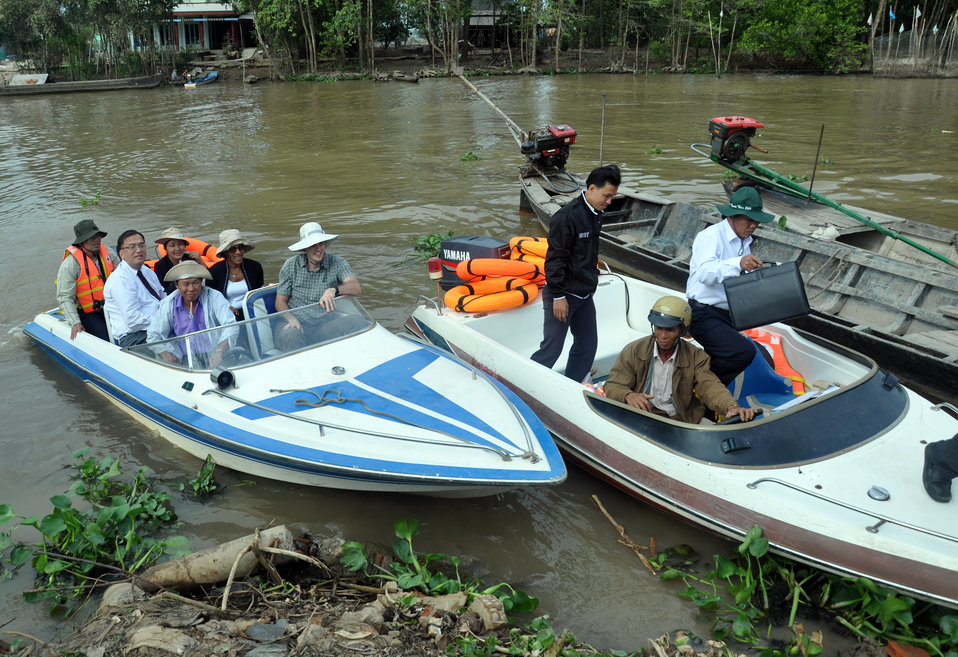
U.S. Consul General Le An visits USAID beneficiaries

USAID site visit to Long An Province to visit flood relief beneficiaries